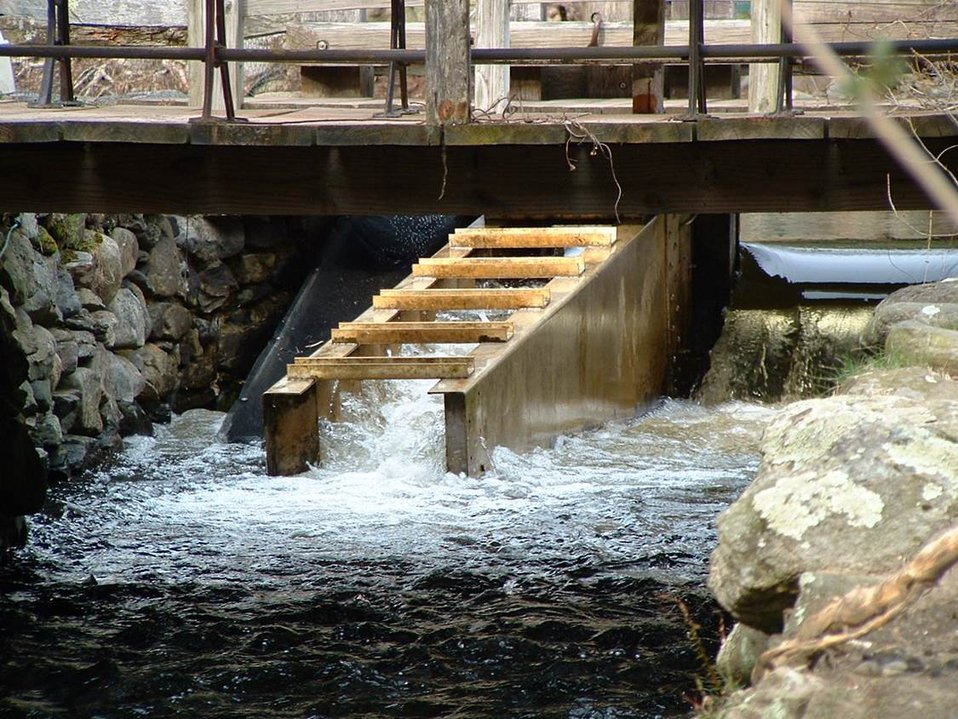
Small steeppass ladder in RI